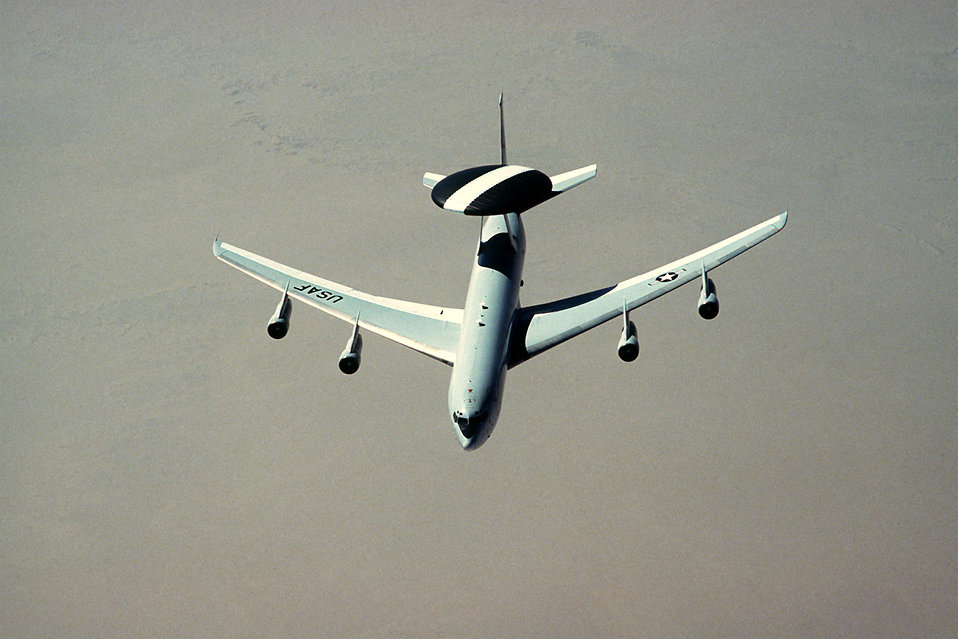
E-3 Sentry

1990's -- An E-3 Sentry aircraft flies over the desert during Operation Desert Shield.